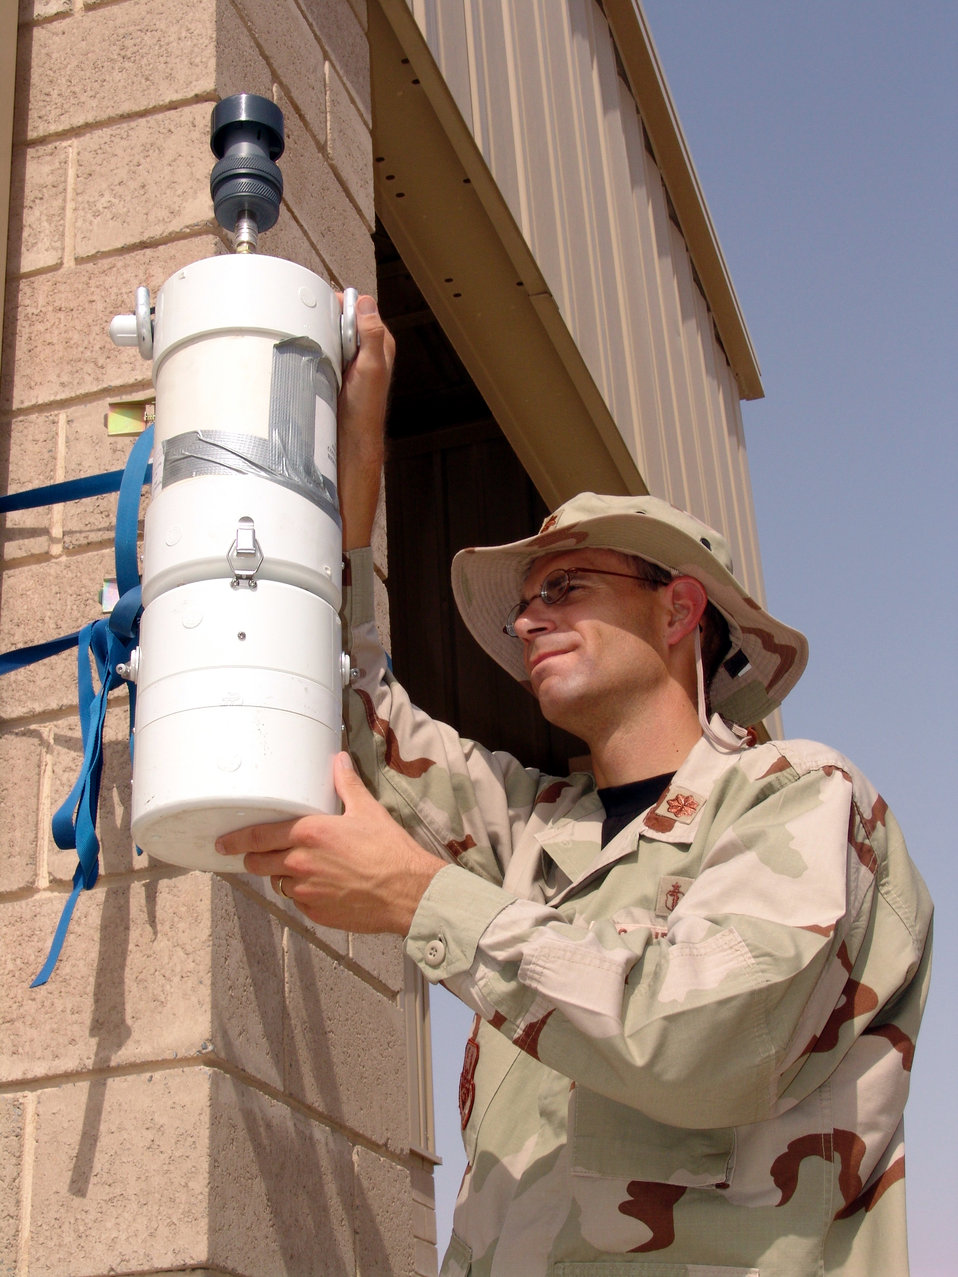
Sample time

SOUTHWEST ASIA -- Maj. Philip Goff attaches an air sampler to its outdoor mounting cradle. As a bioenvironmental engineer at a forward-deployed location, Major Goff compiles long-term environmental health data gathered from air samples for the 386th Air Expeditionary Wing. Air sampler collects pathogens, pollen and man-made pollutants that can be measured and documented to predict and prevent illness trends. Major Goff, of the 386th Expeditionary Medical Group, is deployed from McGuire Air Force Base, N.J.